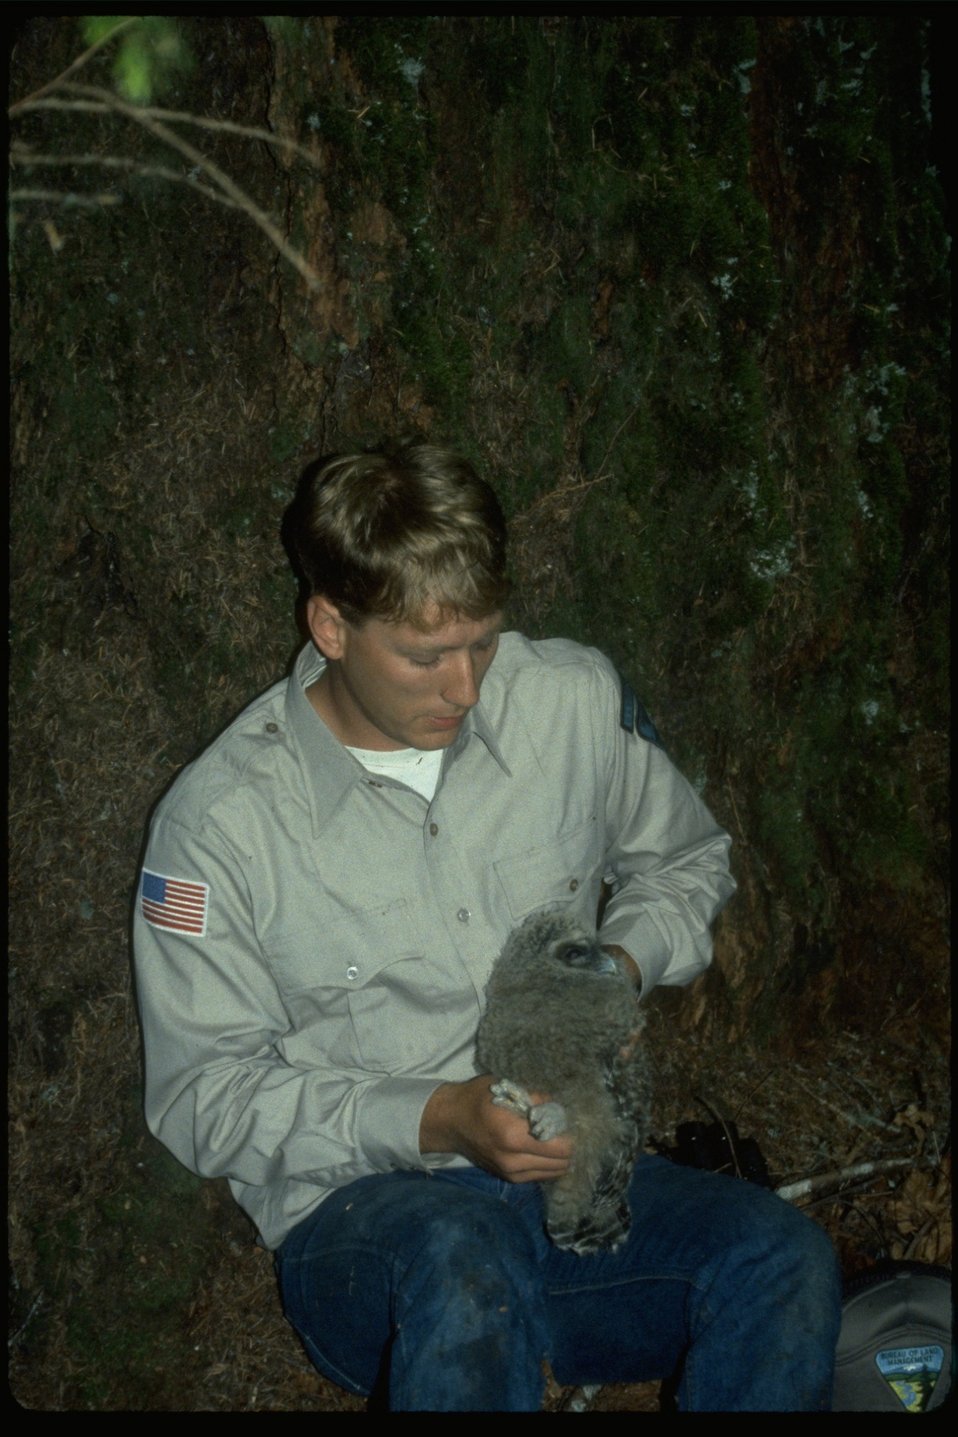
Wildlife specialist, Garth Ross, bands a Spotted Owl chick for the owl census.